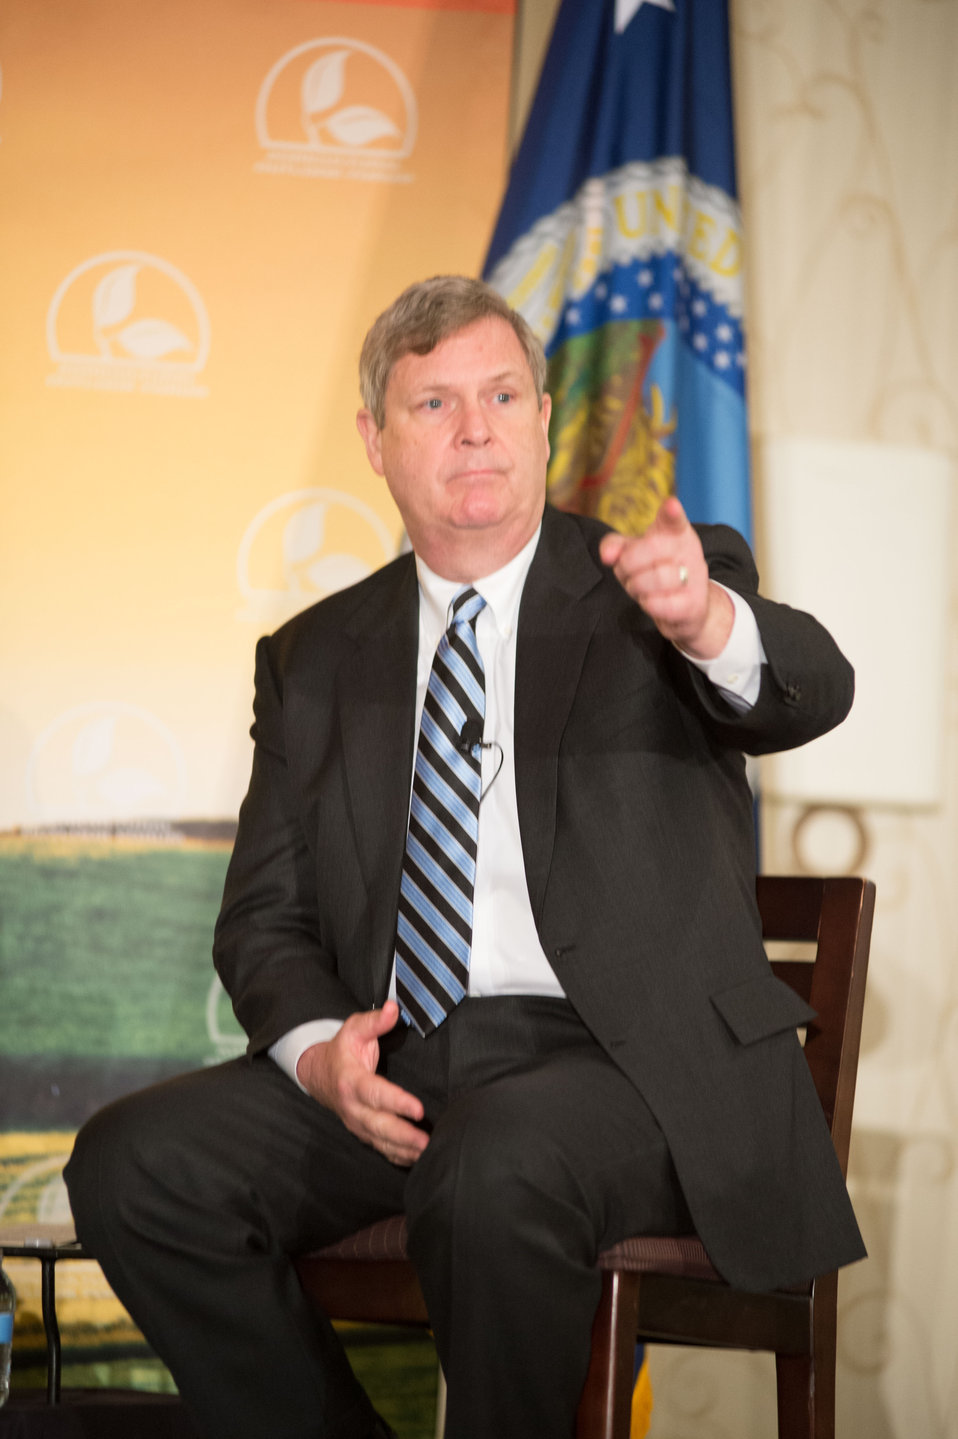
Agriculture Secretary Tom Vilsack takes a question from the audience at the panel session on Building Markets Here and Abroad during the 2014 Agricultural Outlook Forum in Arlington, VA., on Thursday, Feb. 20, 2014. The U.S. Department of Agriculture's (USDA) annual Agricultural Outlook Forum brings together the agricultural community to discuss policy, trade, science, rural development, and the economic outlook for the coming year. The Forum also focuses on forestry, health and nutrition issues, and the changing dynamics and face of rural America.USDA photo by Bob Nichols.